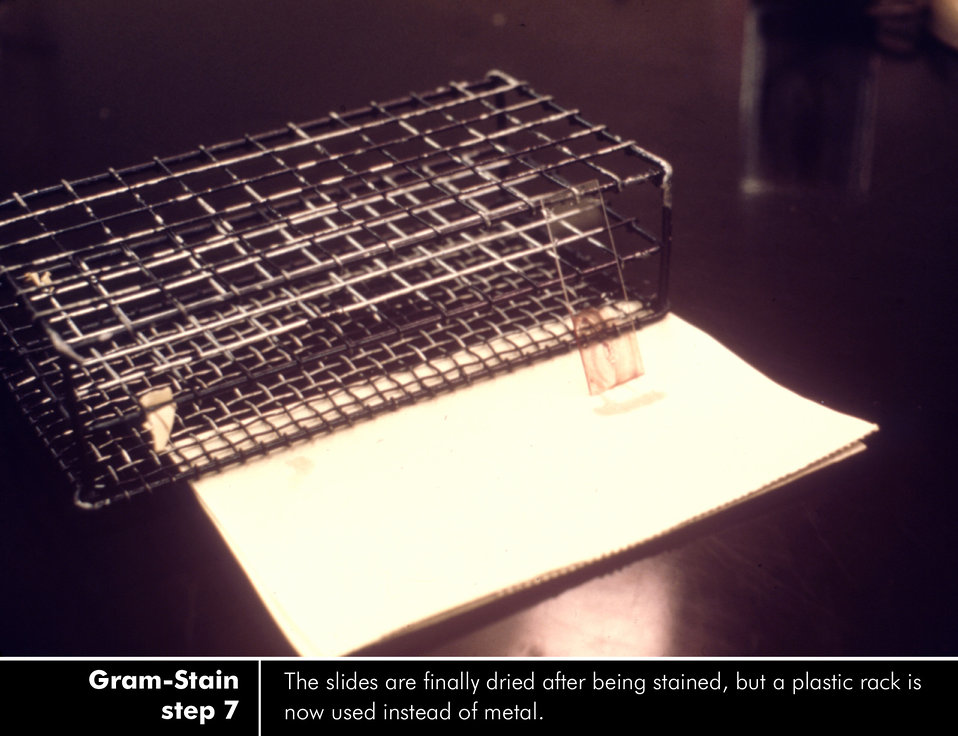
Gram-stain procedure - Step 7 of 7. See PHIL ID#'s: 3433, 3426, 3427, 3435, 3437, 3436, 3434 for the complete set.